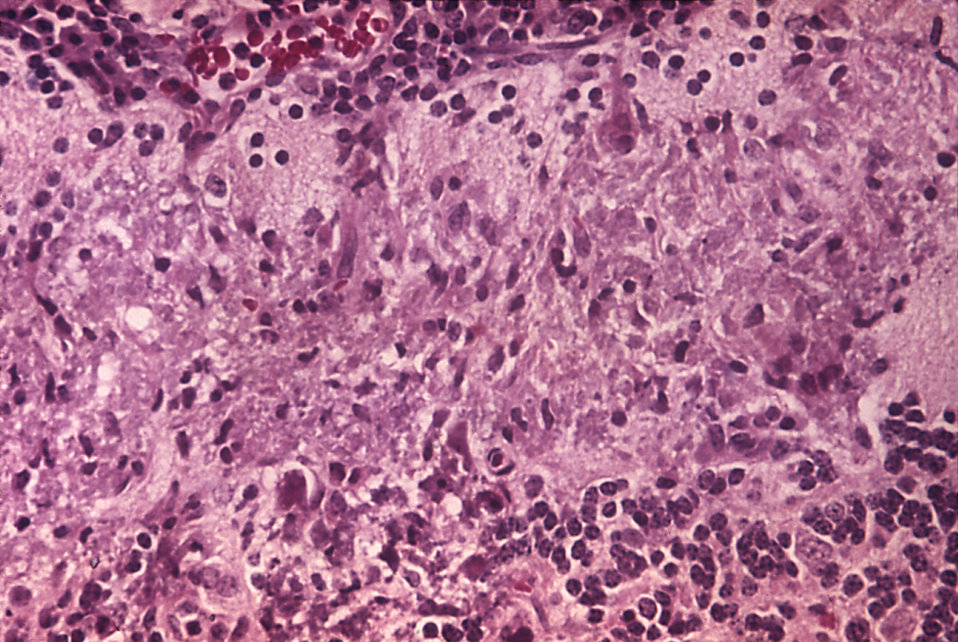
This micrograph reveals the histopathologic changes found in Tamiami virus encephalitis; Mag. 300X.